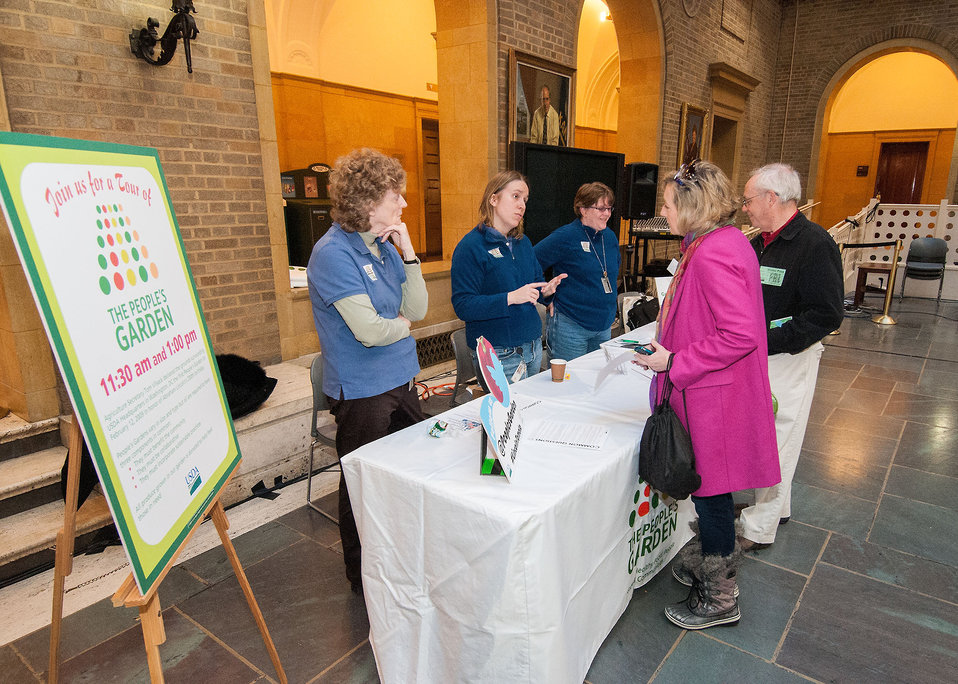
Janet Tenney, Katina Hanson and Michelle Bouchard assist visitors with information at the U.S. Department of Agriculture’s (USDA) People’s Garden exhibit at the USDA Open House on the National Mall, in Washington, D.C., on Friday, Jan. 18, 2013. The Open House was an opportunity to learn more about USDA’s role in agriculture, local and regional food systems, natural resource conservation, nutrition, research and rural development.